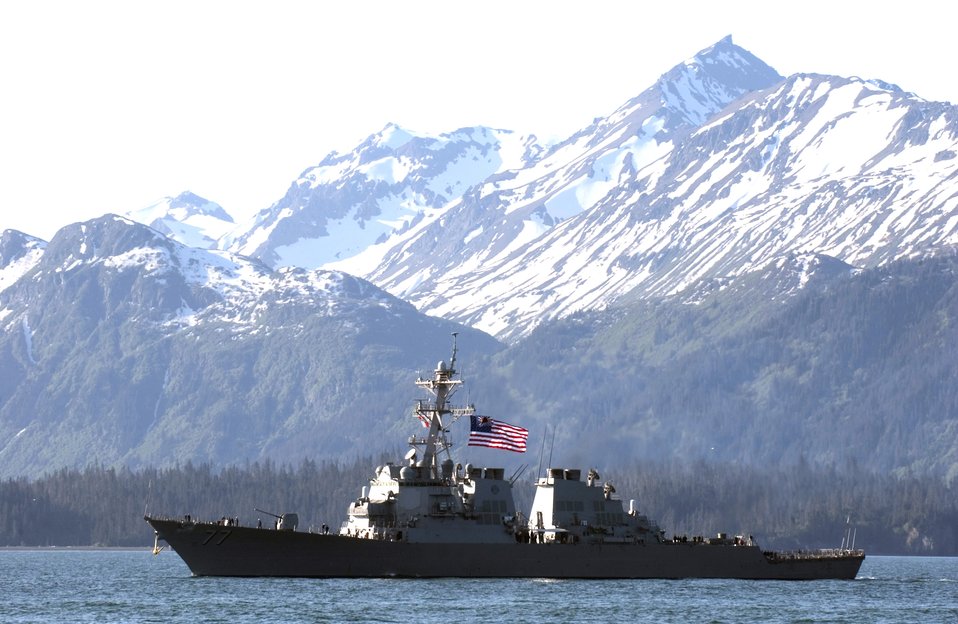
Northern Edge aims for air, sea dominance

The USS O'Kane enters the harbor in Homer, Alaska, Sunday, June 4, 2006. The destroyer was participating in Exercise Northern Edge 2006. The joint training exercise, which runs from June 5 to 16 and is hosted by Alaskan Command, is one of a series of U.S. Pacific Command exercises that prepare joint forces to respond to crises in the Asian Pacific region.